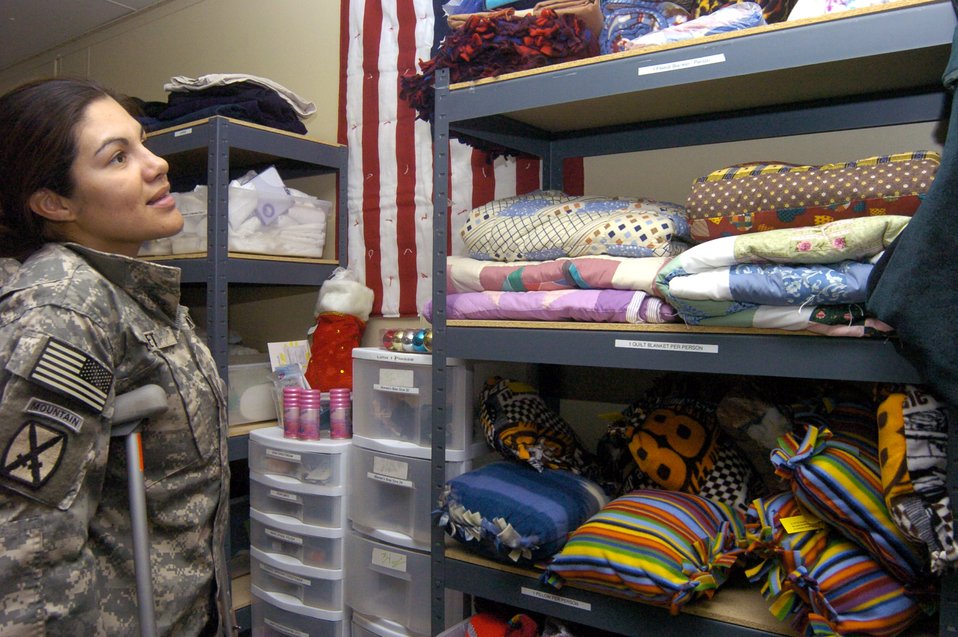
Holiday generosity in motion for wounded warriors

Army Specialist Marcela Supnet decides which quilt to select at the Wounded Warrior Ministry Center at Landstuhl Regional Medical Center, Germany. The handmade quilts and other items are dispensed to wounded warriors and other patients at the hospital.